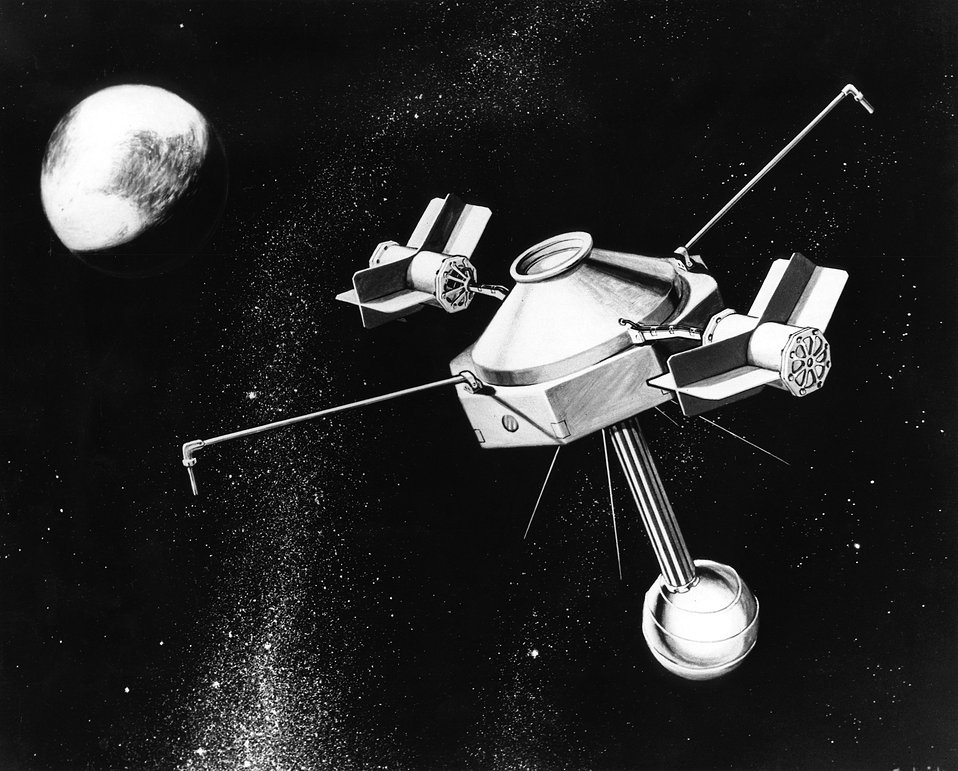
Atomic IMP satellites, some of which will be powered by atomic generators, will be launched by NASA into highly elliptical orbits to monitor energetic particles and magnetic fields between the earth and the moon.